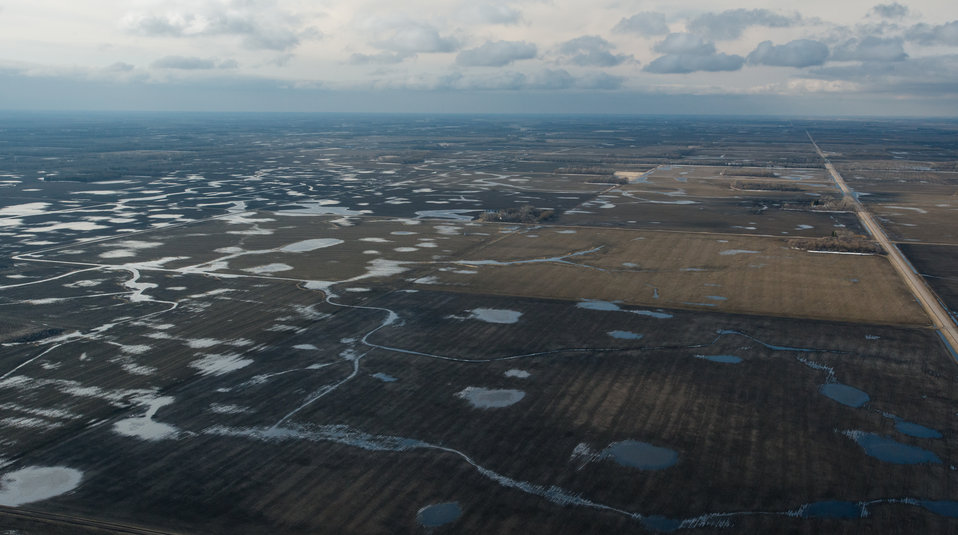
Wetlands and windbreaks along the Tutrle River Watershed in Grand Forks County, ND, part of the Red River basin, on Wednesday, May 1, 2013.